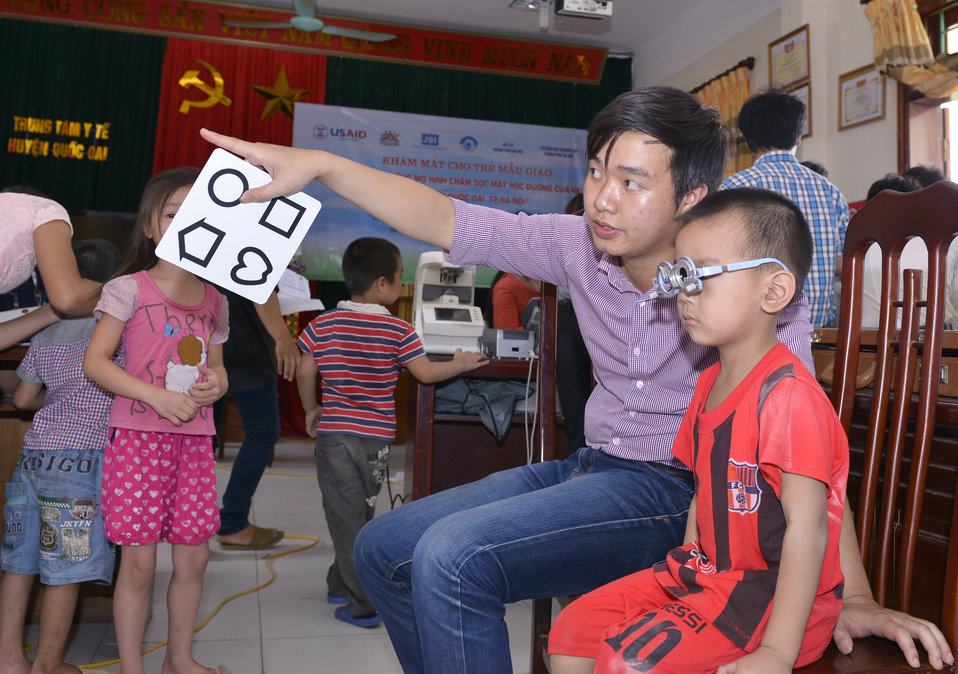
Eye screening for kindergarten children in Quoc Oai district of Hanoi

Quoc Oai, Hanoi. May 31, 2014.